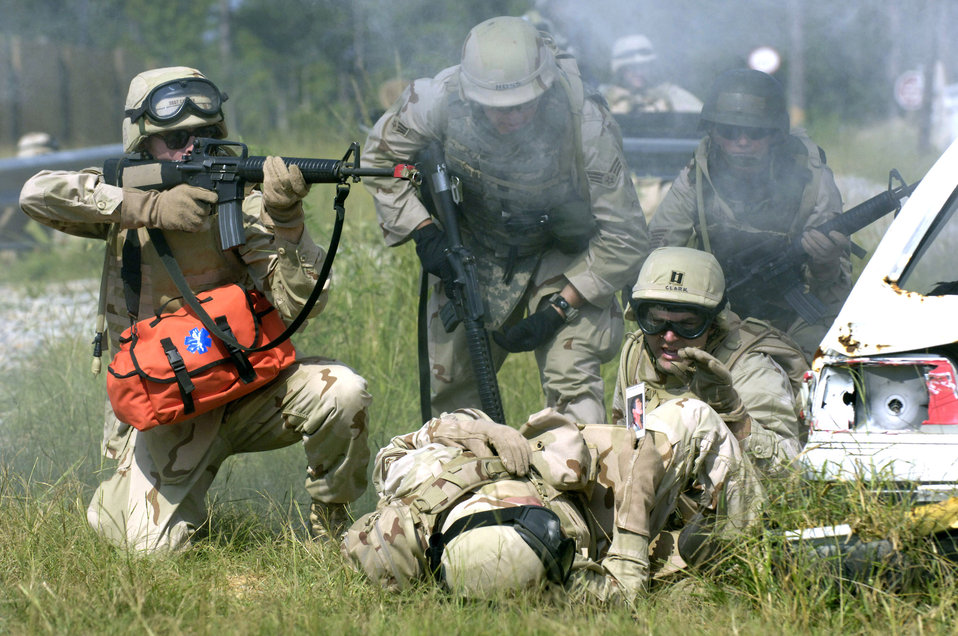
Combat skills course

After simulated sniper fire